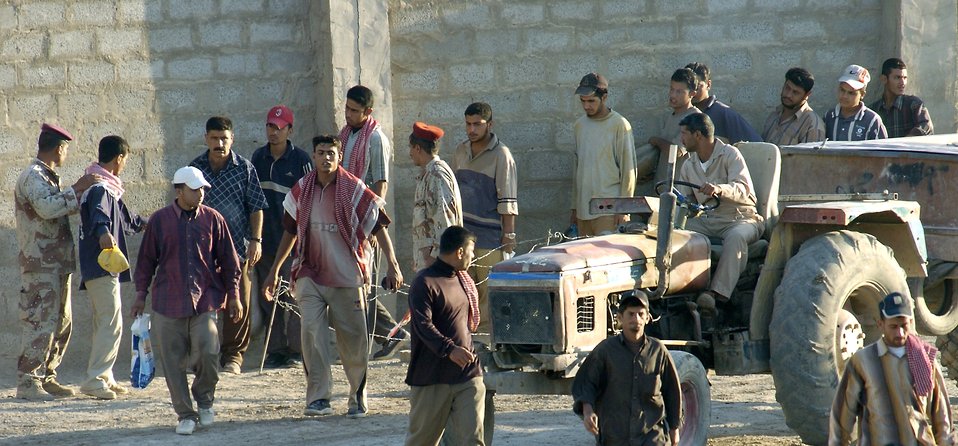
Airmen train Iraqi soldiers on base defense

Workers line up to enter Ar Rasheed Base, Iraq, on Friday, May 26, 2006. The Iraqi soldiers search every person and every vehicle that enters. Each soldier is trained and advised by five security forces Airmen and their Army commander who live and work on the base.